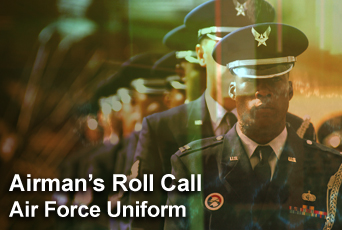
Airman's Roll Call: Air Force uniform issues

This week's Airman's Roll Call focuses on Air Force Chief of Staff Gen. Norton A. Schwartz's decision last week to defer a decision on the heritage service coat until summer 2009.